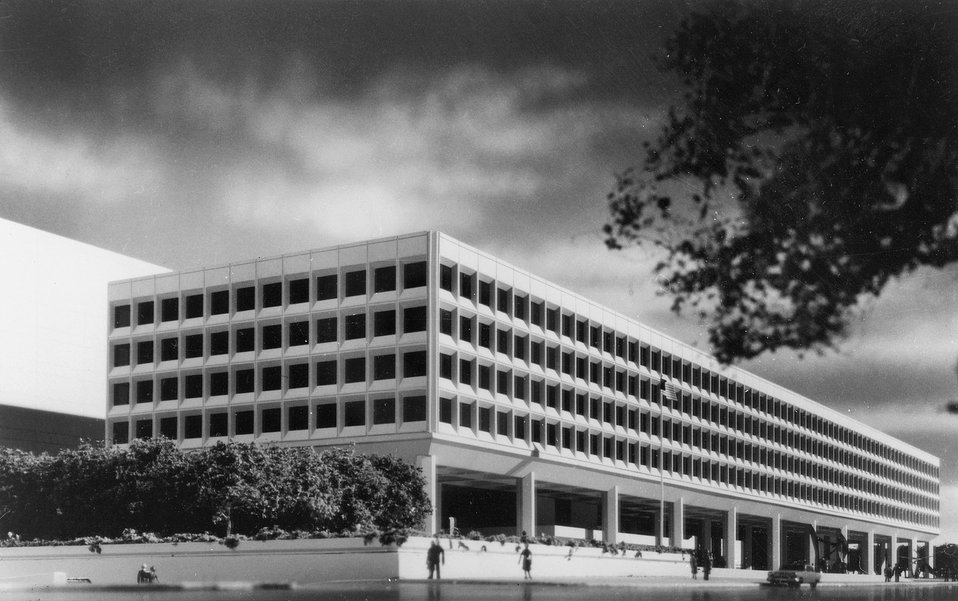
Federal Office building No. 5 Washington DC